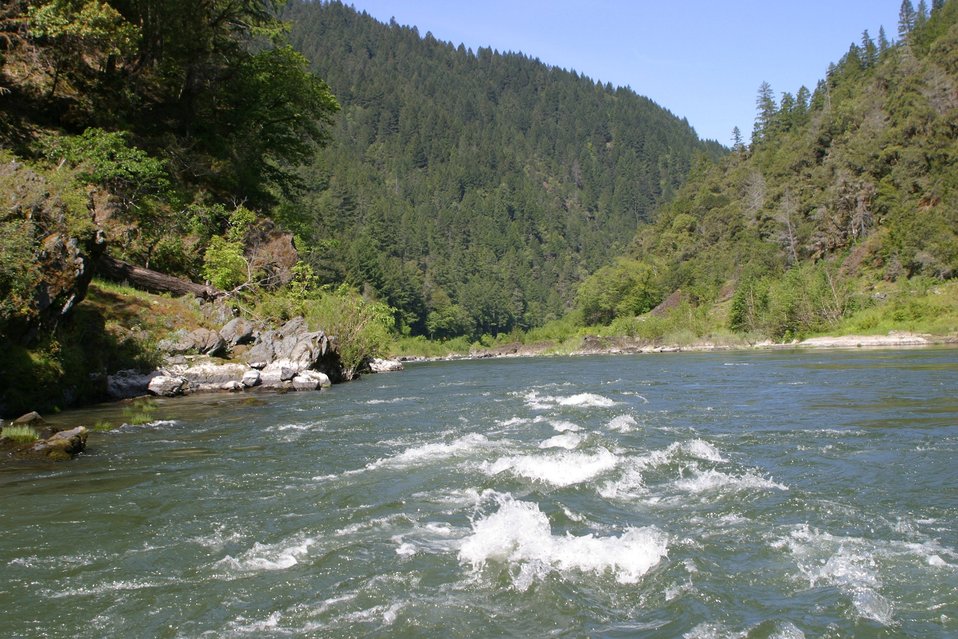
Wild section of the Rogue River from Grave Creek to Foster Bar May 19 to May 22.